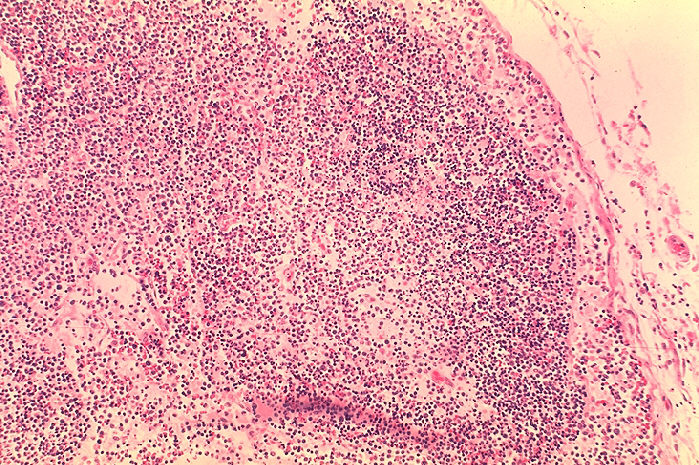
Histopathology of lymph node in fatal human plague.